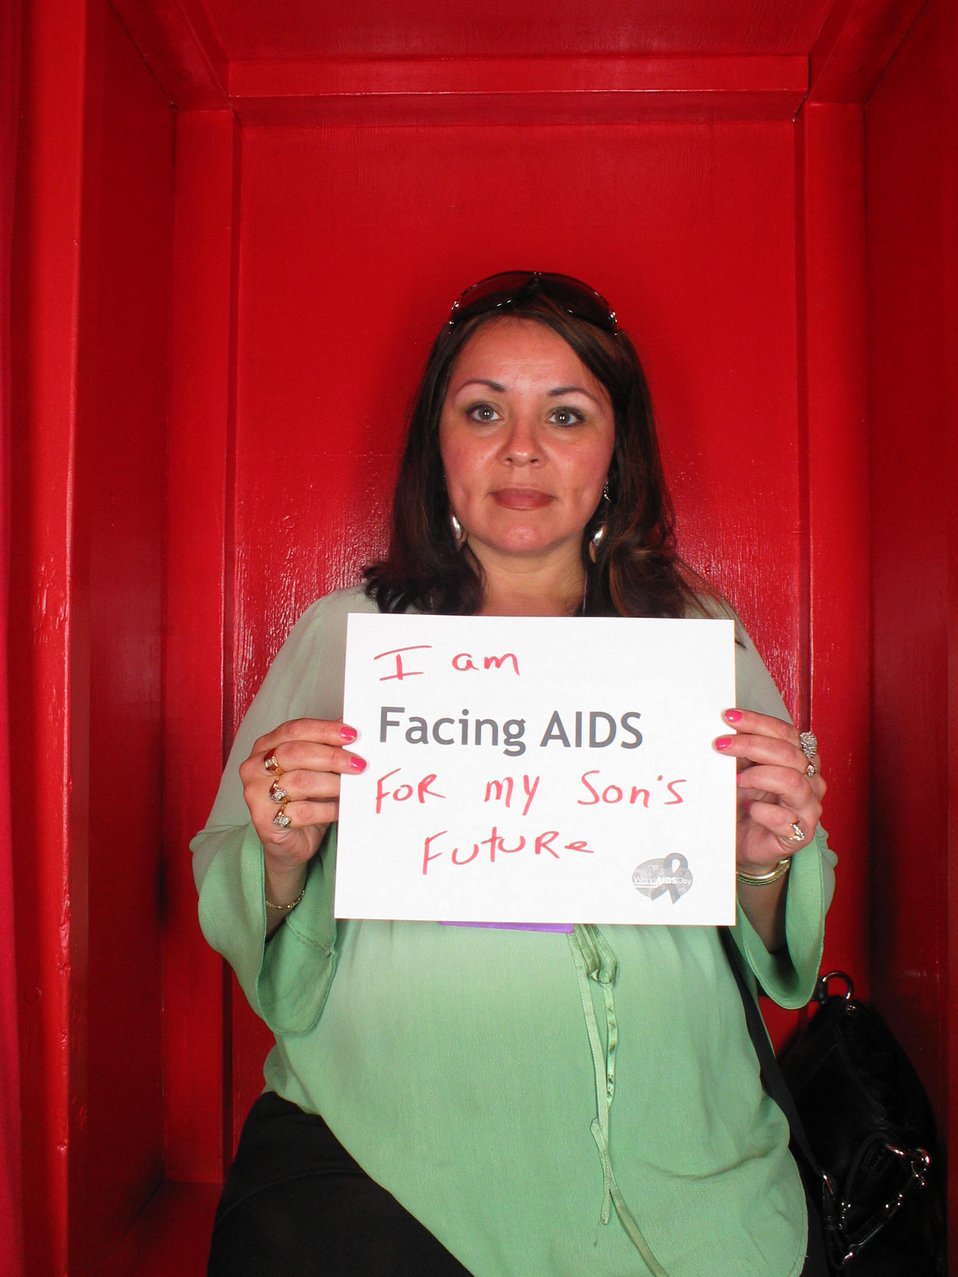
I am Facing AIDS for my son's future.